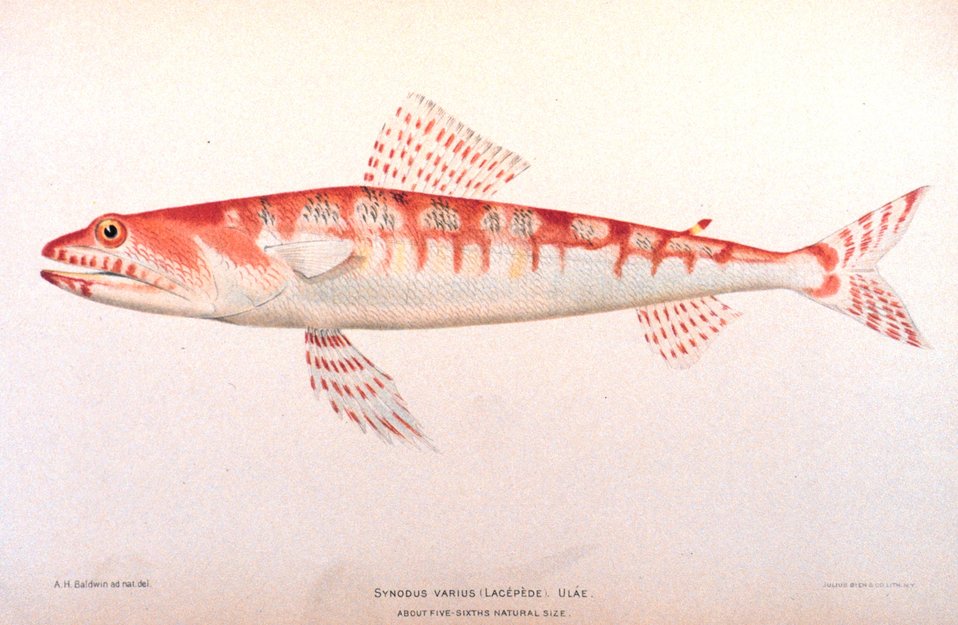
Synodus varius (Lacepede). Ulae. In: 'The Shore Fishes of the Hawaiian Islands, with a General Account of the Fish Fauna', by David Starr Jordan and Barton Warren Evermann. Bulletin of the United States Fish Commission, Vol. XXIII, for 1903. Part I. P. 574, Plate II.